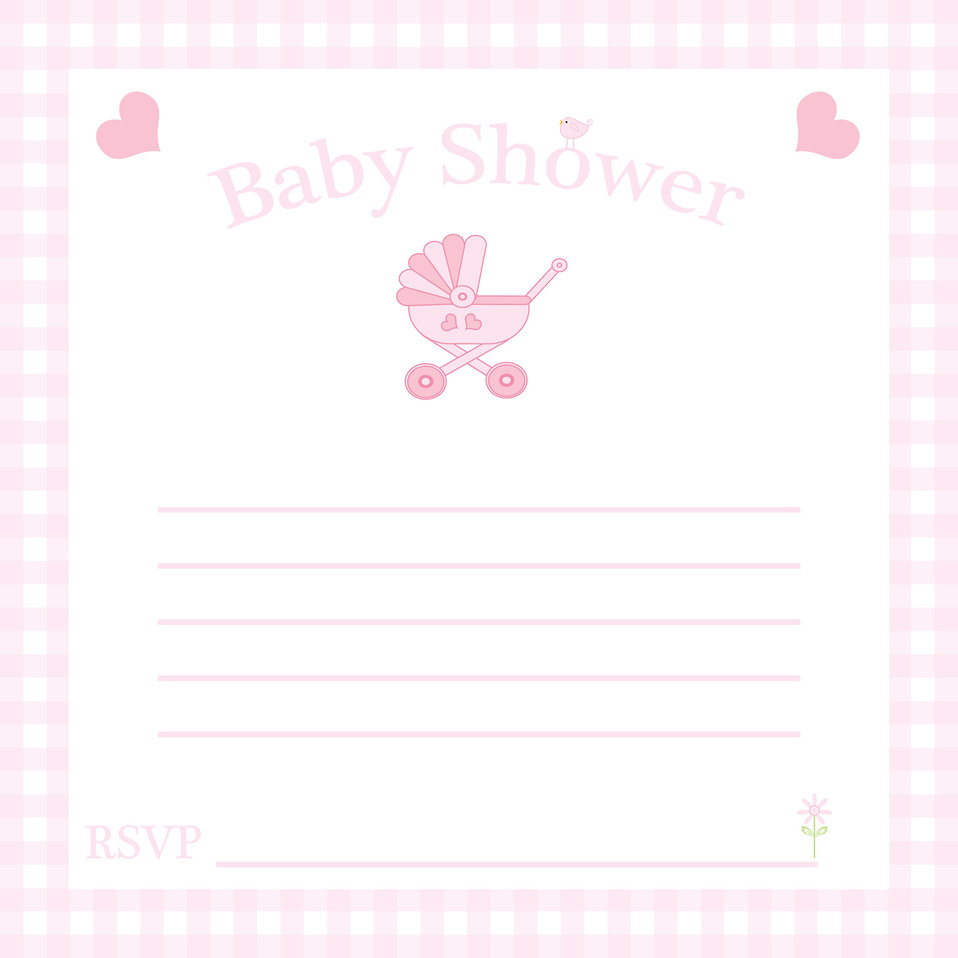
Baby shower invitation

Pink baby girl shower invitation template.